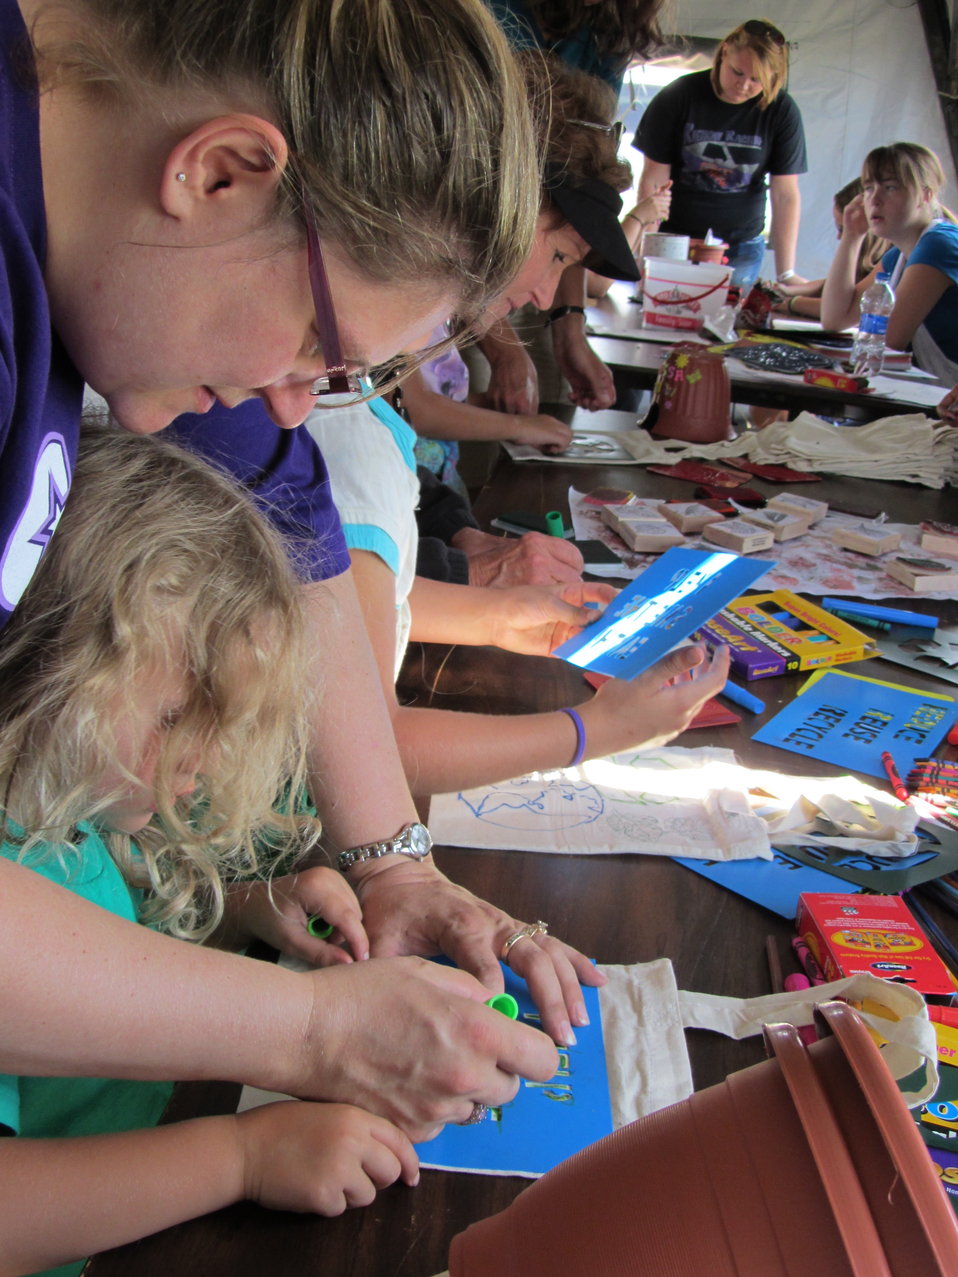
2011 Huron Prairie Fest